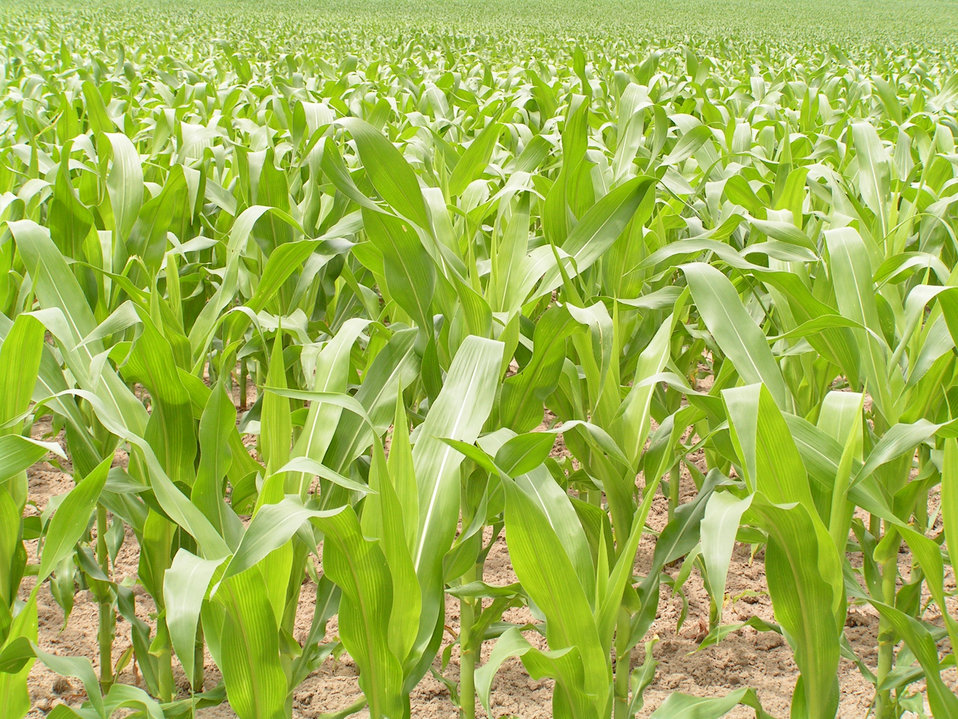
Bright corn field

Field of brightly colored green growing corn..